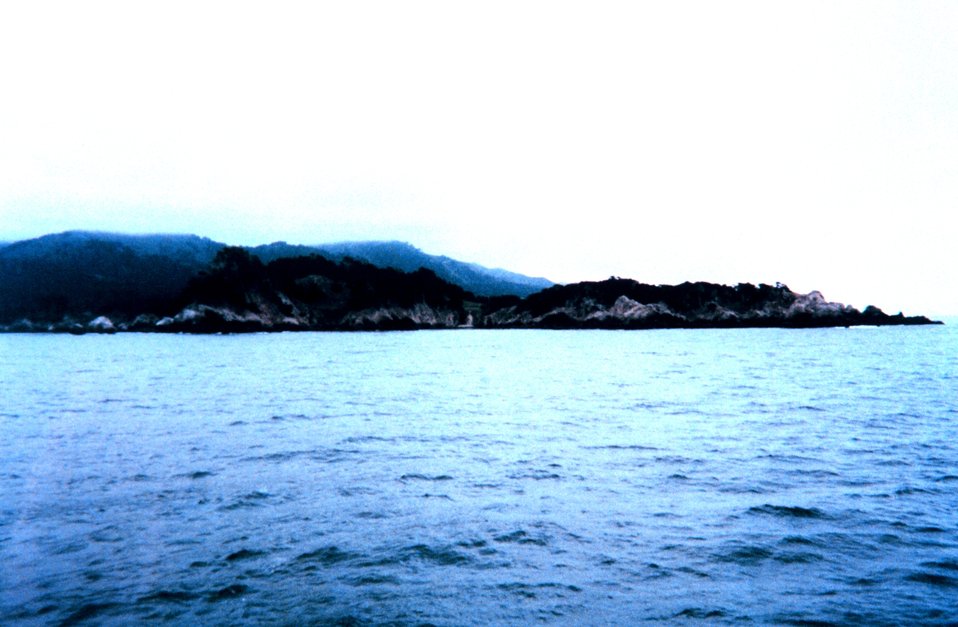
Point Lobos and the mountains of Big Sur as seen from Carmel Bay.